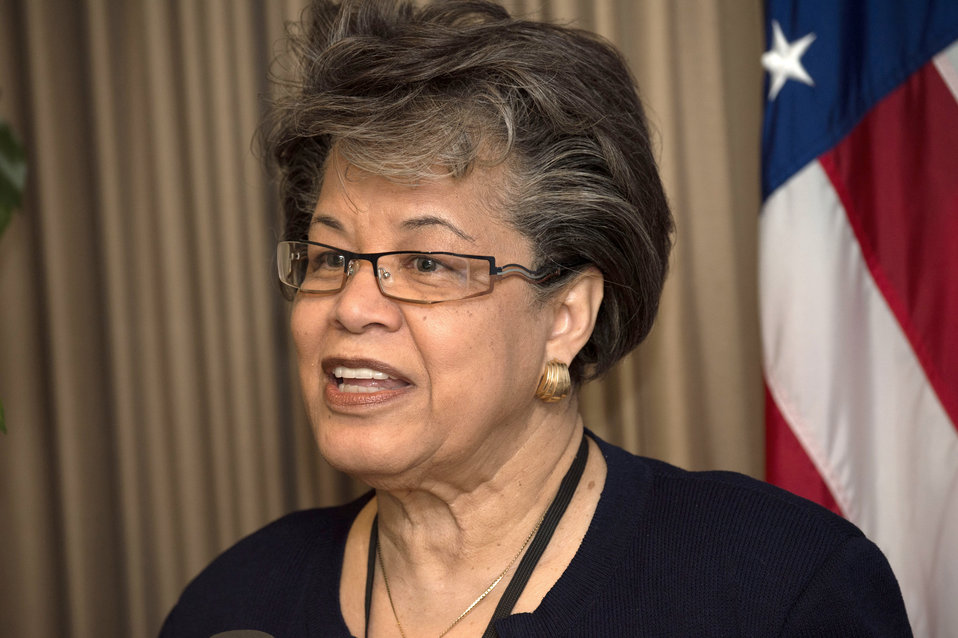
U.S. Department of Agriculture (USDA) Office of the Assistant Secretary for Civil Rights (OASCR) Office of Advocacy and Outreach Dr. Gladys Vaughan speaks at the “In conversation With Tuskegee Airmen” event at USDA headquarters in Washington, D.C. on Thursday, Mar. 27, 2014.